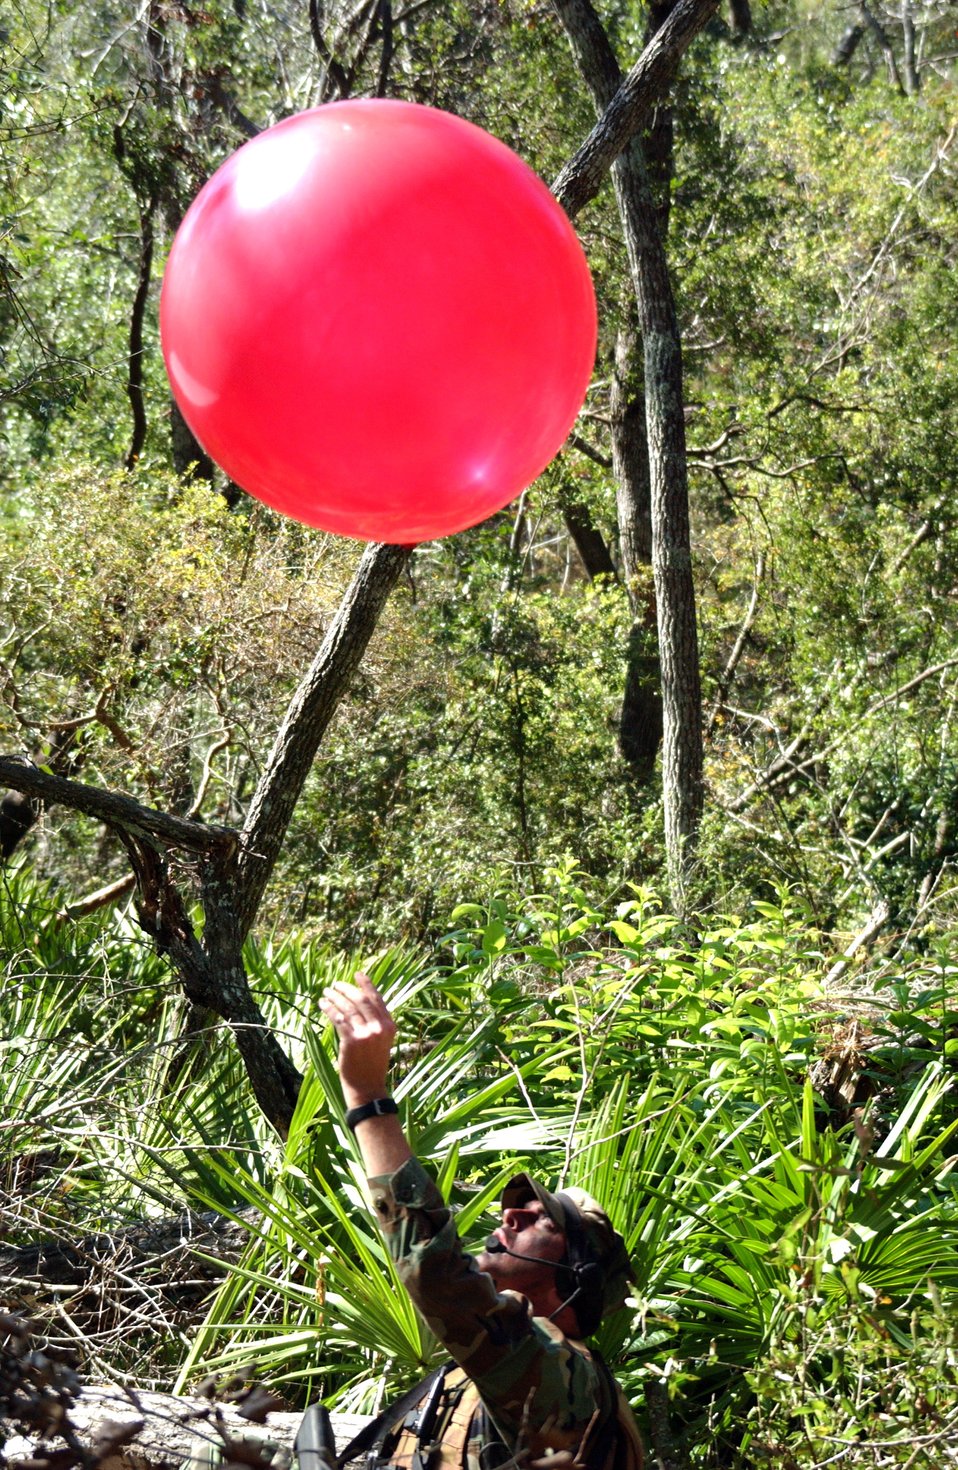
Front line forecast

HURLBURT FIELD, Fla. (AFPN) -- Staff Sgt. Jody Ball releases a weather balloon during a special operations' weather team exercise near the base. Sergeant Ball is a weatherman with the 10th Combat Weather Squadron.